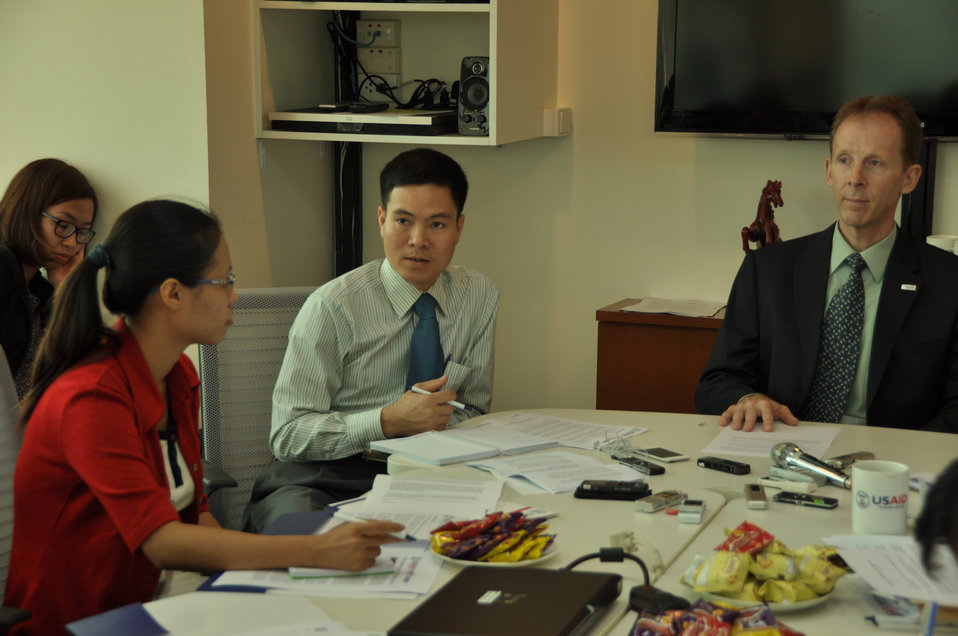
USAID Mission Director Joakim Parker announces climate change awards

October 17, 2012